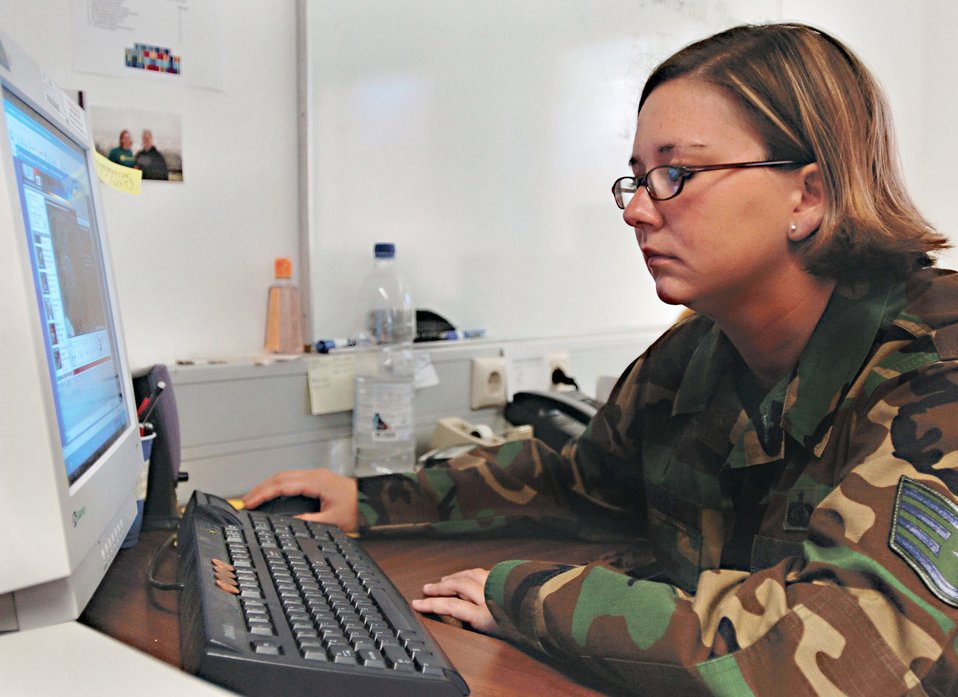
Hurricane aftermath extends to Germany

SPANGDAHLEM AIR BASE, Germany -- Staff Sgt. Jamie Bosarge views images of her hometown through the Internet. Sergeant Bosarge said most of the main areas of her hometown in Pascagoula, Miss., were destroyed by the hurricane and subsequent floods. She is a network training instructor with the 52nd Communications Squadron here.